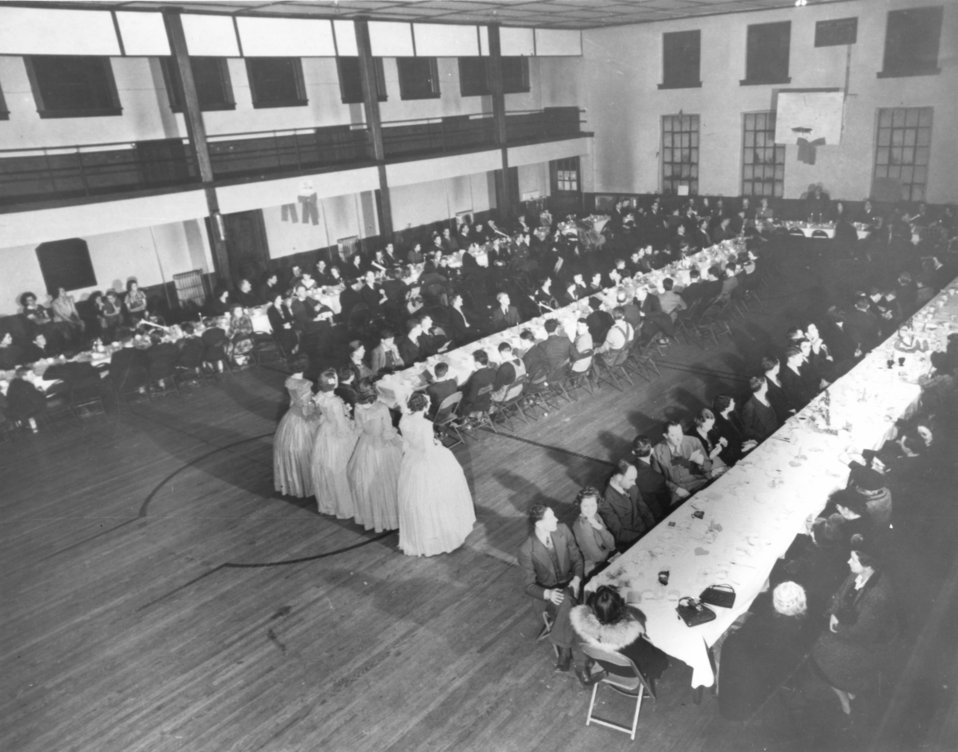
Early settlers at Oak Ridge